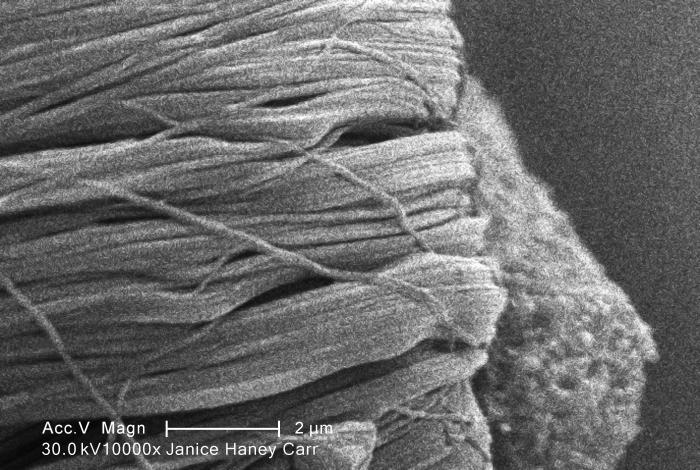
Under a very high magnification of 10000X, this scanning electron micrograph (SEM) revealed some of the microcrystalline ultrastructure exhibited by a piece of raw chrysotile, or white asbestos, which had been excavated from the Lowell Asbestos Mine on Belvidere Mountain, Vermont.